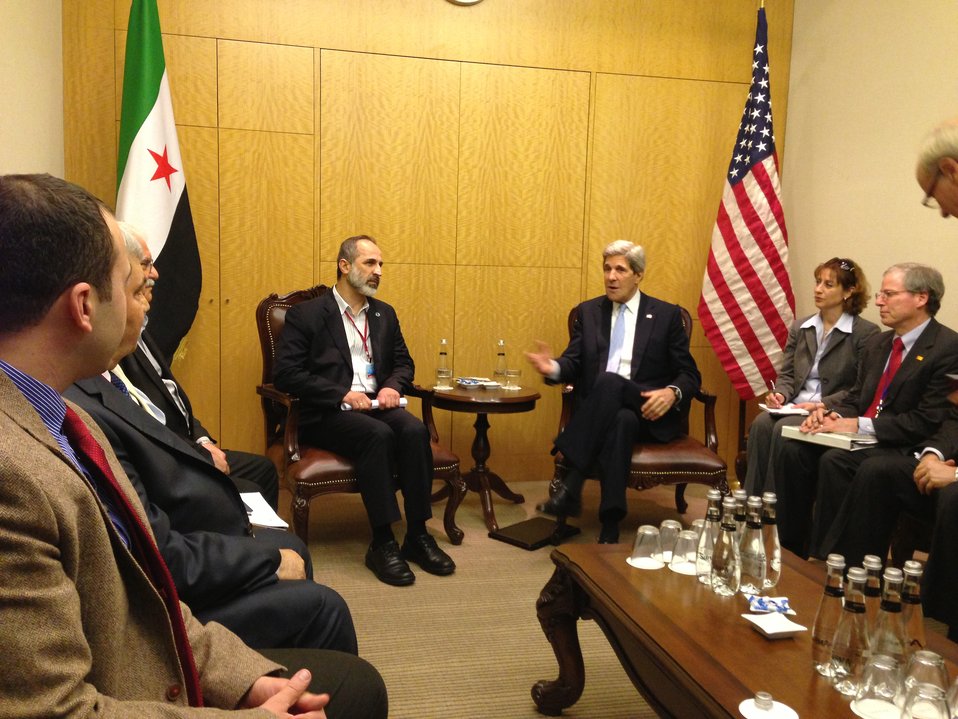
Secretary Kerry Meets With Syrian Opposition Council Chairman al-Khatib

U.S. Secretary of State John Kerry meets with Syrian Opposition Council Chairman Moaz al-Khatib in Istanbul, Turkey on April 20, 2013.